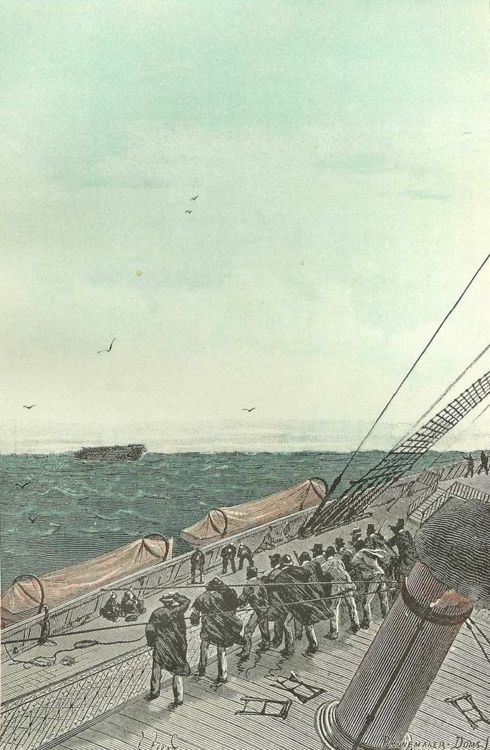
An illustration from Jules Verne's novel 'A Floating City' (1869) drawn by Jules Férat. Polski: Ilustracja powieści Juliusza Verne'a 'Pływające miasto' (1869) autorstwa Julesa Férata. Français : Jules Verne: 'Une Ville flottante' (1869), dessins par Jules Férat. Orginal text: Français : Cette épave était une coque de navire.